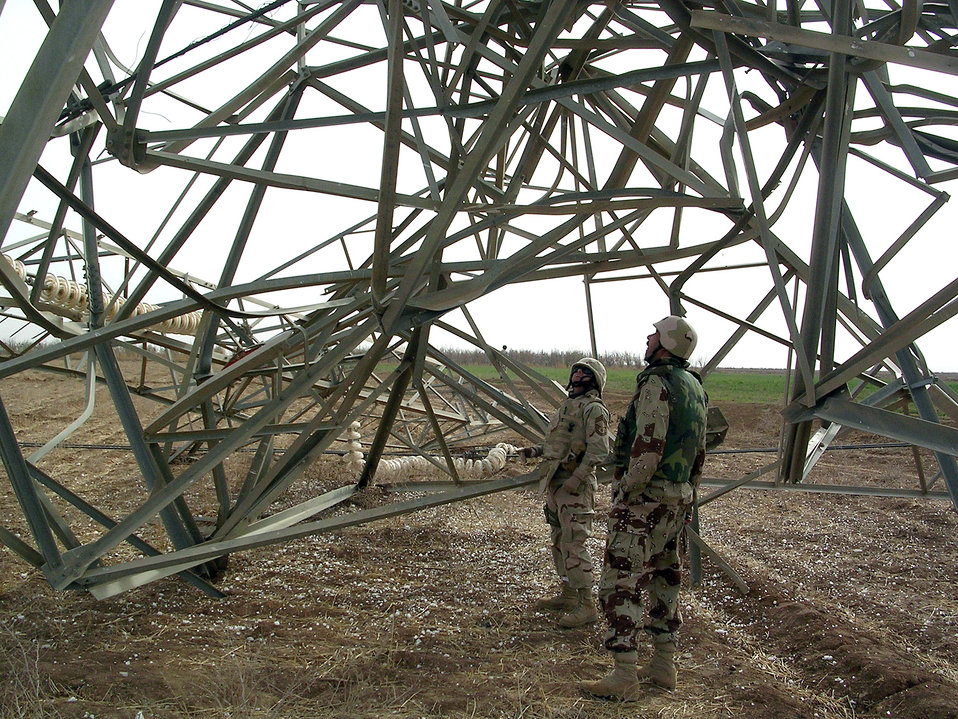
Infrastructure team

SOUTHWEST ASIA -- Chief Master Sgt. Paul Kaplan, the electrical infrastructure liaison officer, inspects a damaged high-voltage power line tower with an Iraqi Army officer.